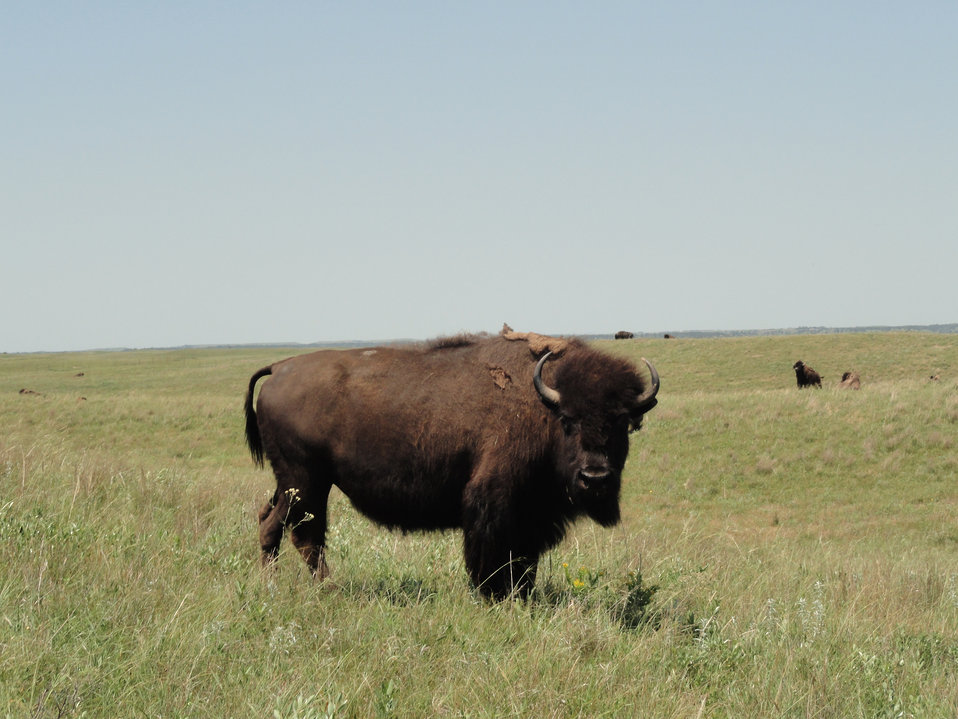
bison, Fort Niobrara National Wildlife Refuge

Photo: Ben Edwards, USFWS
2011 Wilderness Fellow